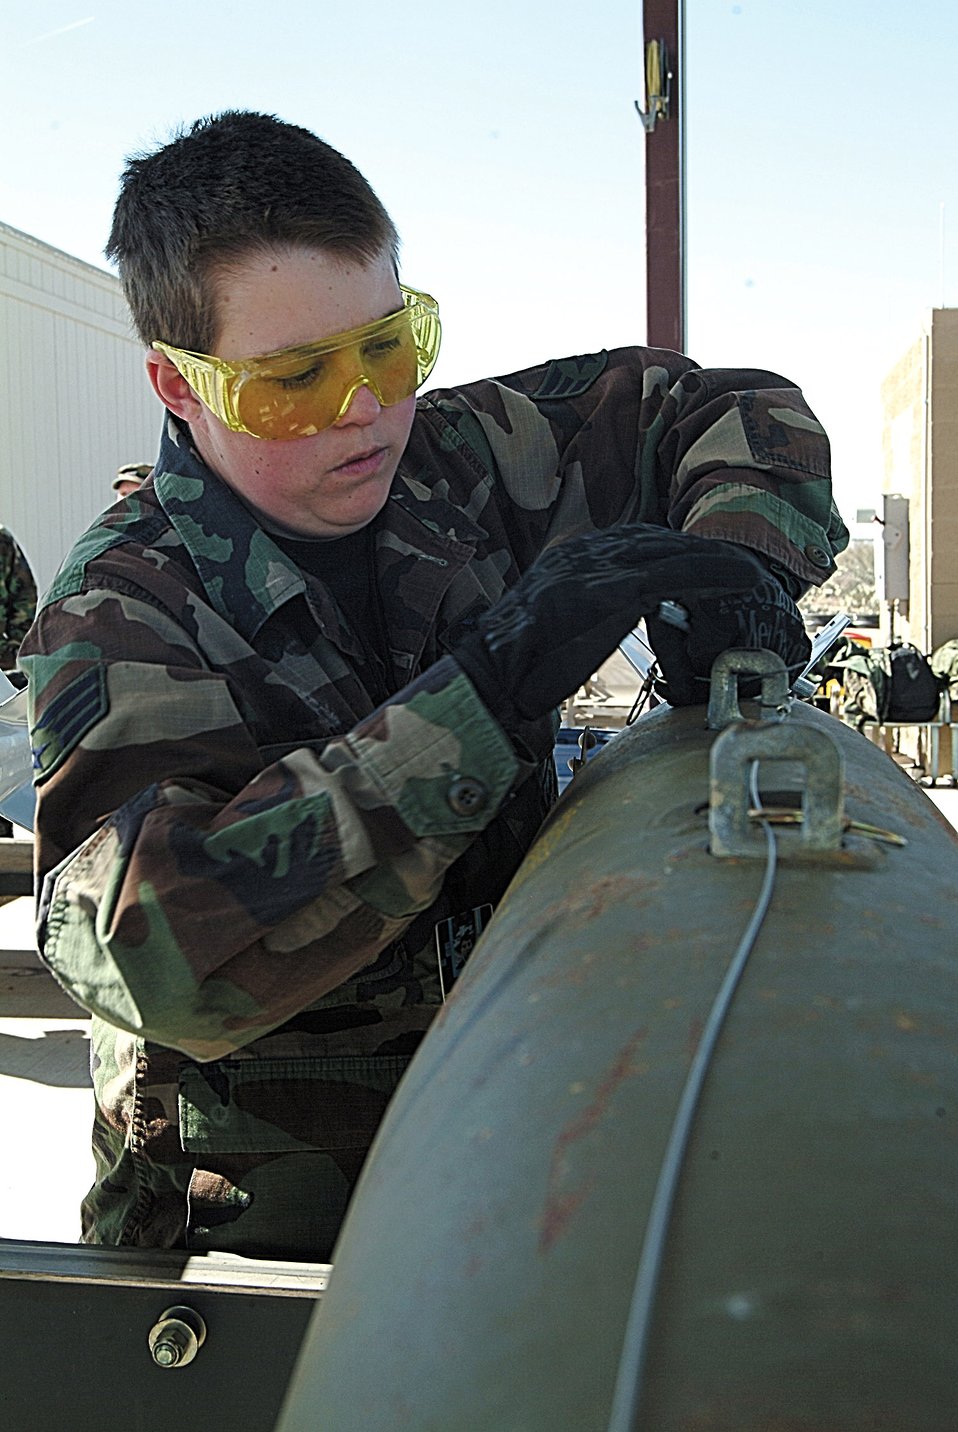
Missouri fighter wing goes to wild, wild west

Senior Airman Stephanie Couch, a munitions systems technician, works on a 500-pound Mark 82 bomb at the Davis-Monthan Air Force Base, Ariz., munitions storage area. Couch and fellow ammo Airmen provided a steady flow of bombs for the Wing's pilots to drop at the range. Airman Crouch is assigned to the 442nd Maintenance Squadron deployed from Whiteman Air Force Base, Mo.